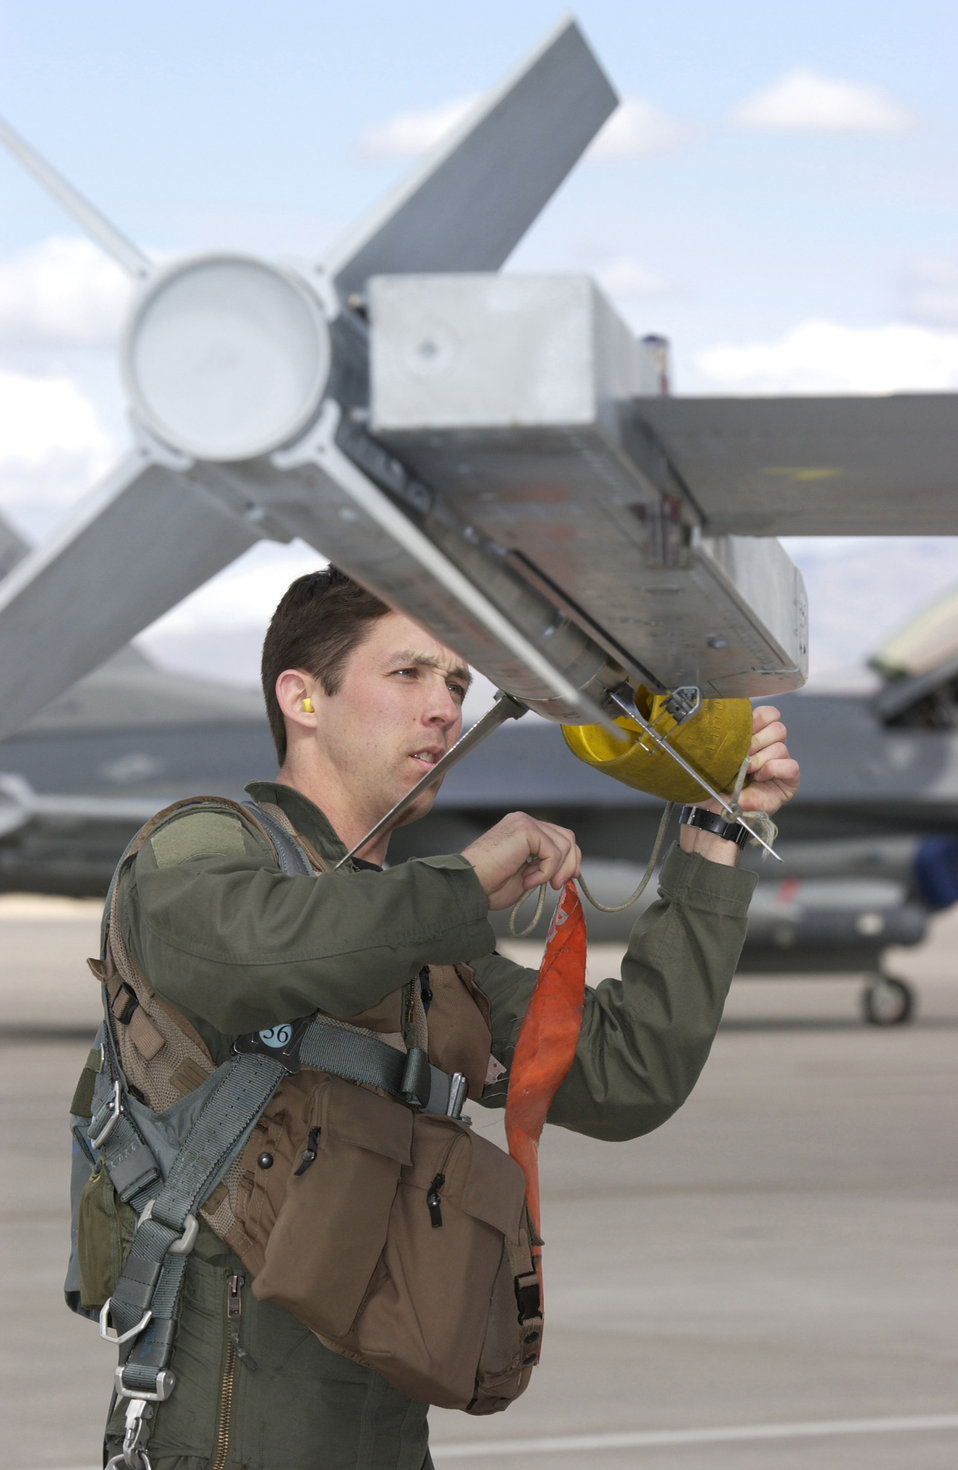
Air Warriors fly high

NELLIS AIR FORCE BASE, Nev. -- First Lt. Aleksas Justys inspects a missile on an F-16 Fighting Falcon before a mission here. He is assigned to the 18th Fighter Squadron at Eielson Air Force Base, Alaska. Airmen from Eielson are here to participate in Air Warrior, an air-to-ground exercise which provides close-air support to Soldiers training at the U.S. Army National Training Center at Fort Irwin, Calif.